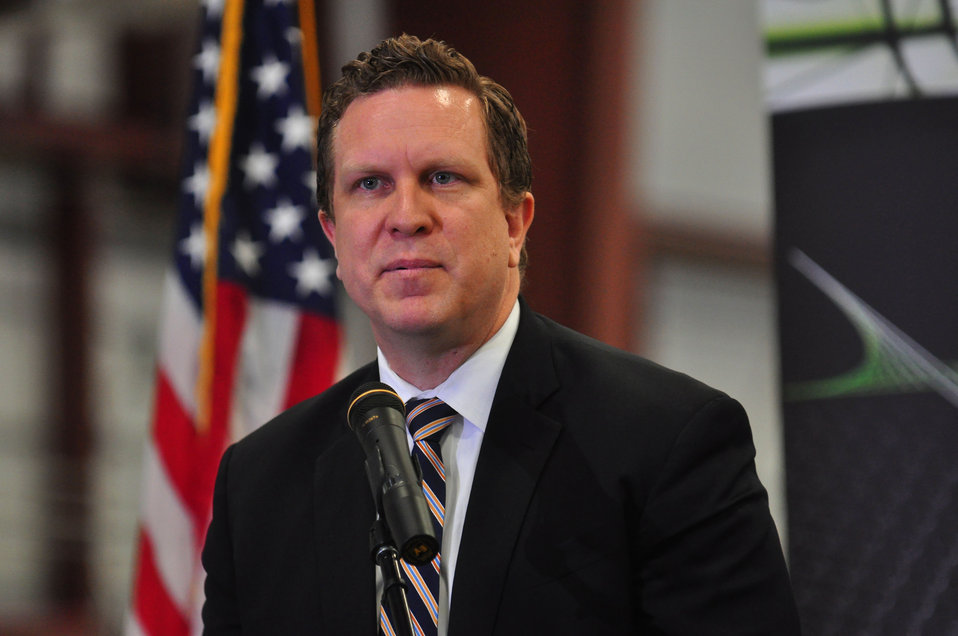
Carbon Fiber Technology Facilty Open House Oak Ridge Tennessee

13-025 DOE photo Lynn Freeny
Assistant Secretary for Energy Efficiency and Renewable Energy David Danielson